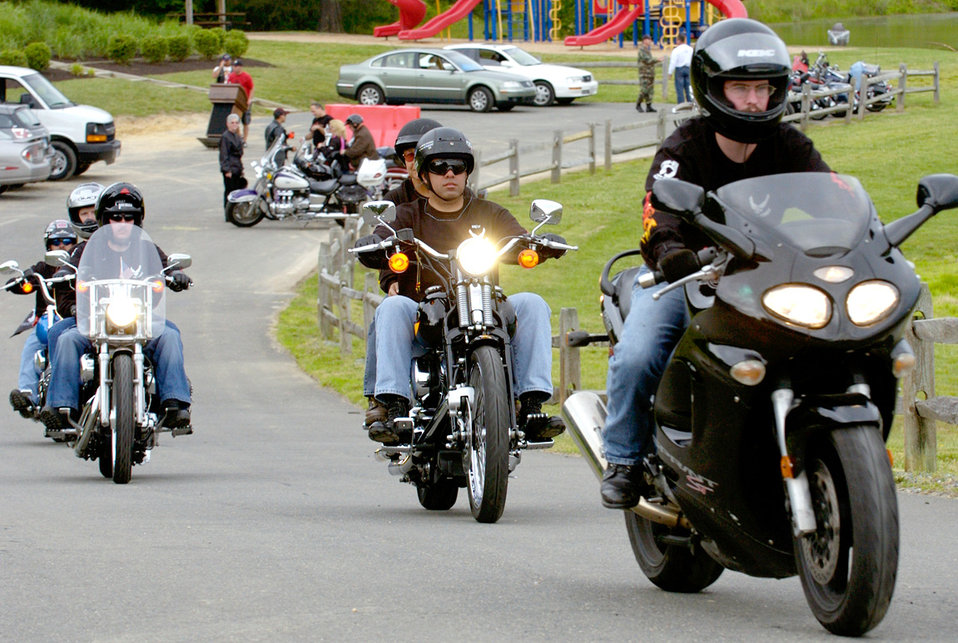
Motorcycle safety forum held at Andrews

ANDREWS AIR FORCE BASE, Md. -- Motorcyclists with a riding club at Moody Air Force Base, Ga., head out after attending a motorcycle safety forum here May 28. Riders Air Force-wide gathered with officials from the Motorcycle Safety Foundation and senior officials from various Air Force safety offices to share some insights into safety issues affecting Airmen who ride motorcycles.